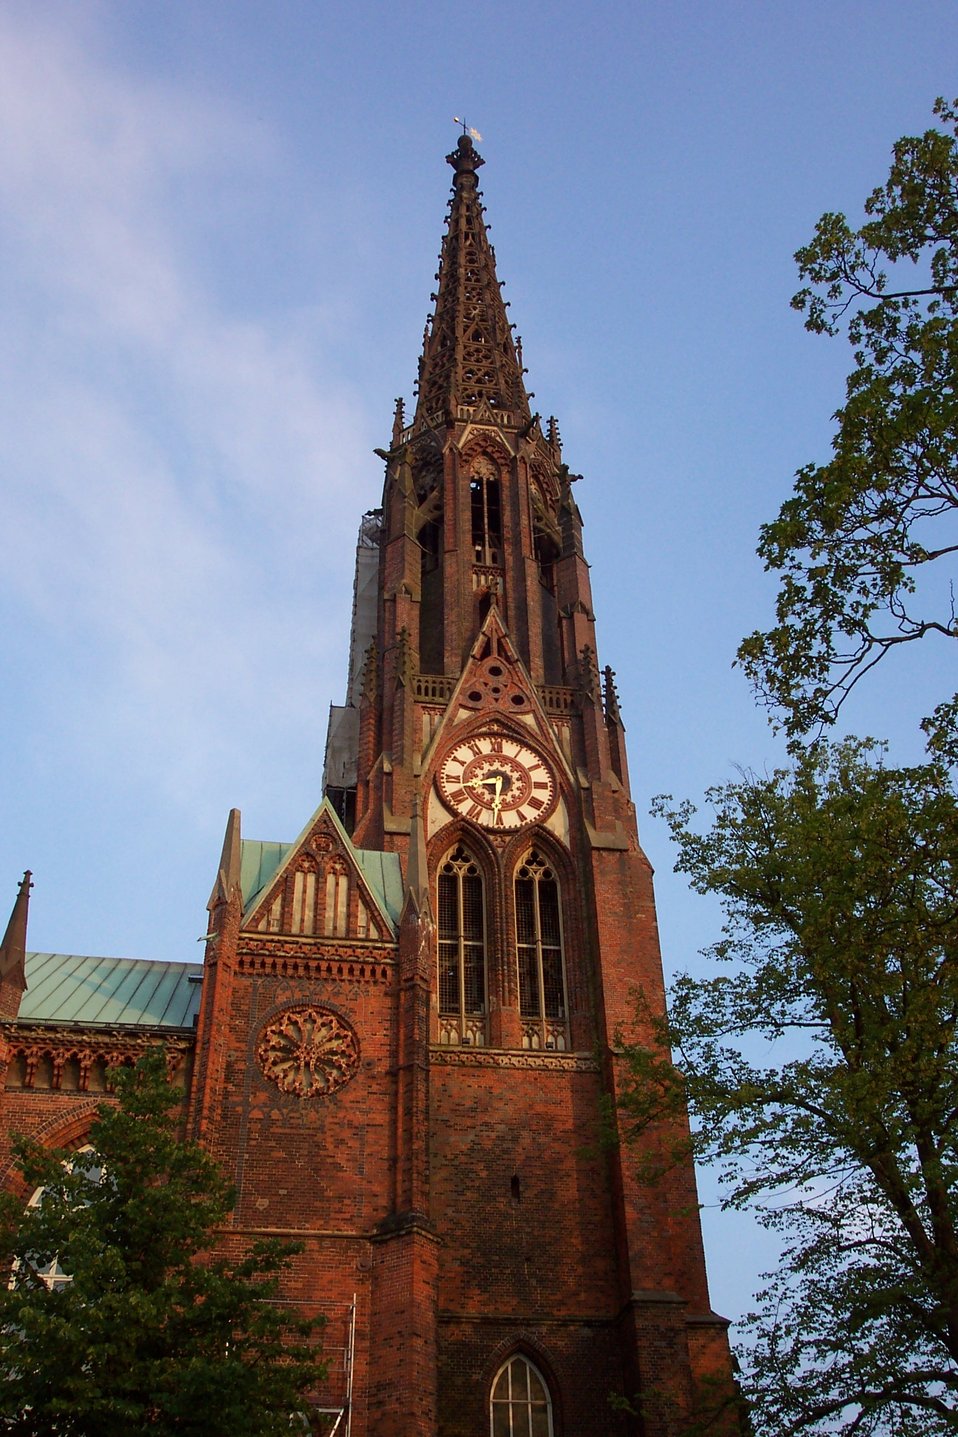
The cathedral at Bremerhaven.